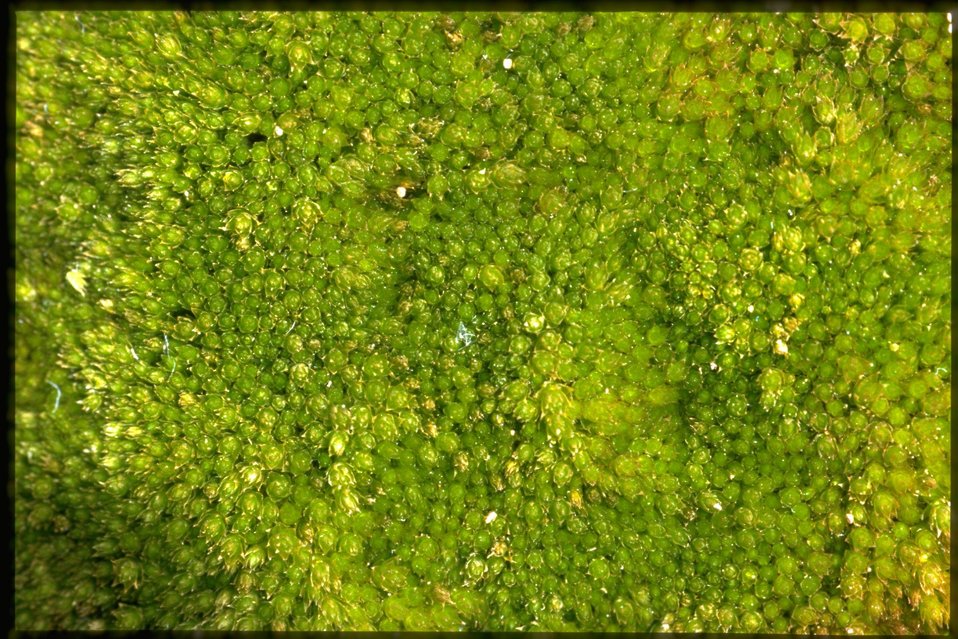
Closeup shot of Moss.